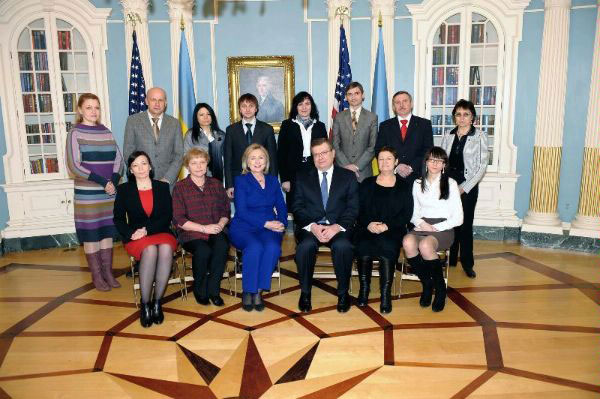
Secretary Clinton and Ukrainian Foreign Minister Gryshchenko Meet With Ukrainian Civil Society Leaders

U.S. Secretary of State Hillary Rodham Clinton and Ukrainian Foreign Minister Gryshchenko meet with Ukrainian civil society leaders at the U.S. Department of State in Washington, D.C., on February 15, 2011.